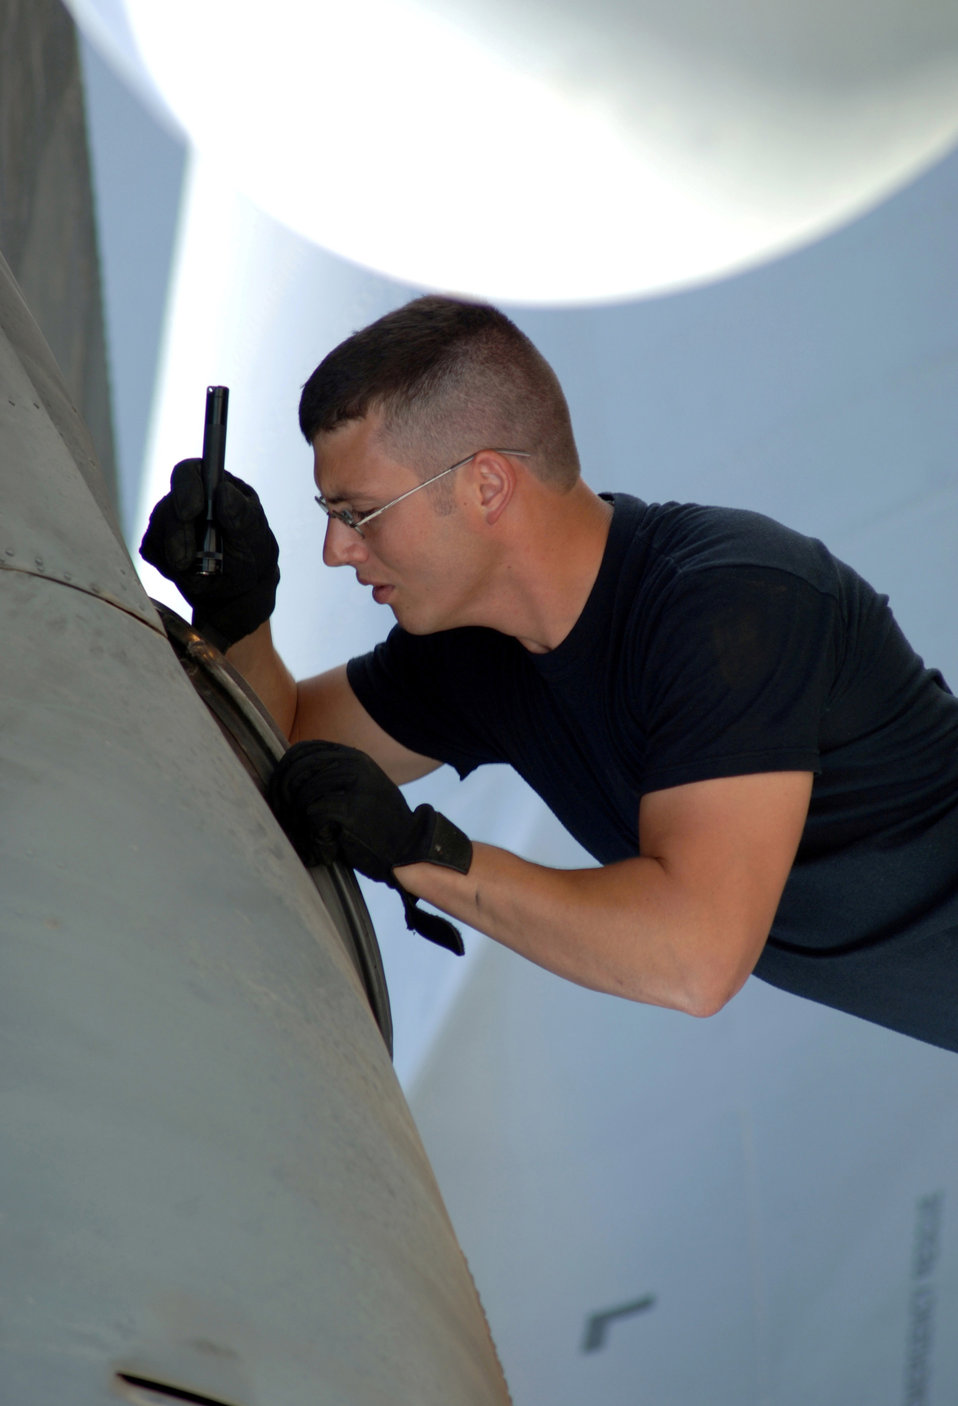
Inside the beast

ALI BASE, Iraq -- Senior Airman Chad Hedrick inspects a C-130 Hercules after its return from a mission. The 407th Air Expeditionary Group's Airmen operate C-130s and train more than 100 Iraqi airmen to maintain and fly the aircraft. Airman Hedrick is assigned to the 777th Expeditionary Aircraft Maintenance Squadron and is deployed from Ramstein Air Base, Germany.